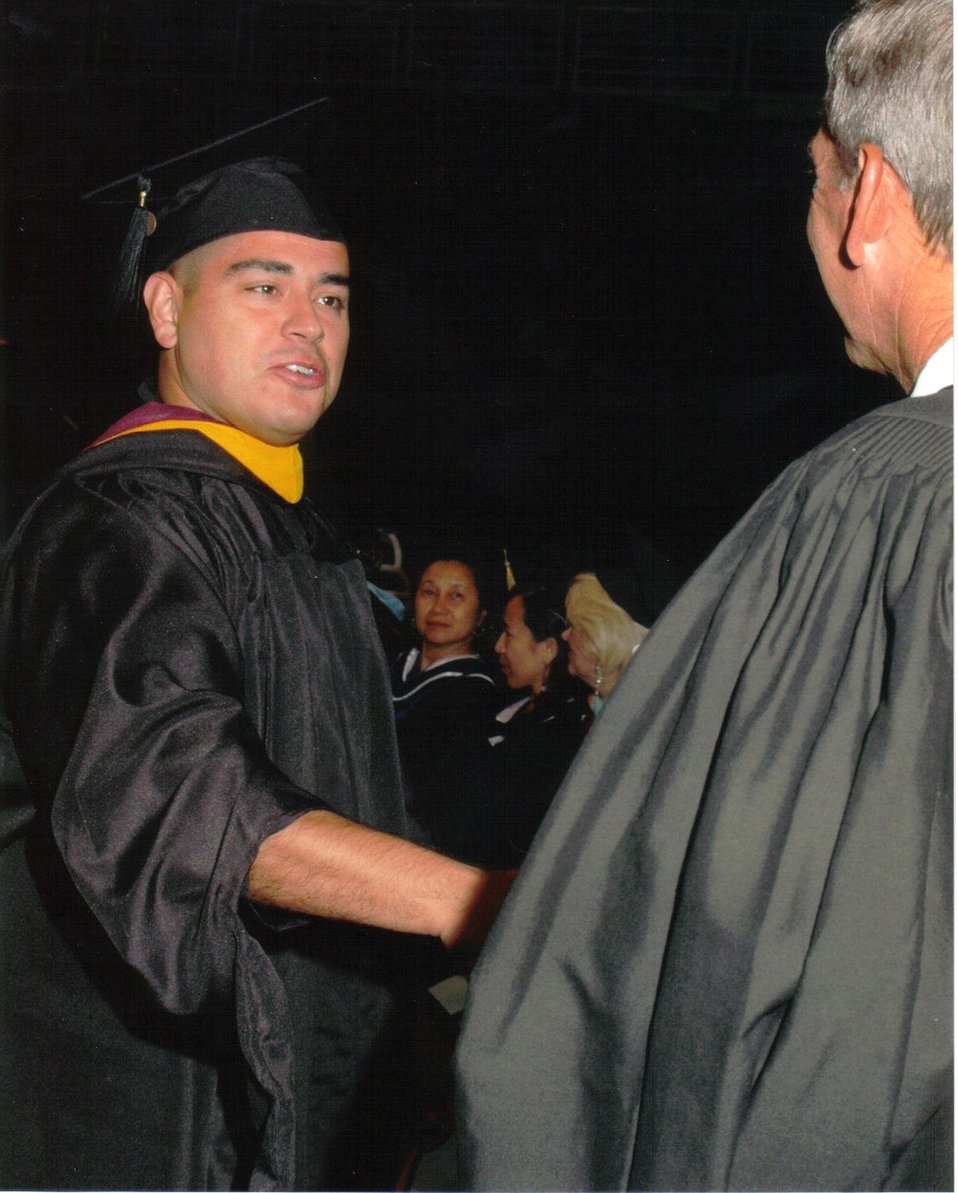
Degrees

PHOENIX (AFPN) -- Tech. Sgt. Rodolfo